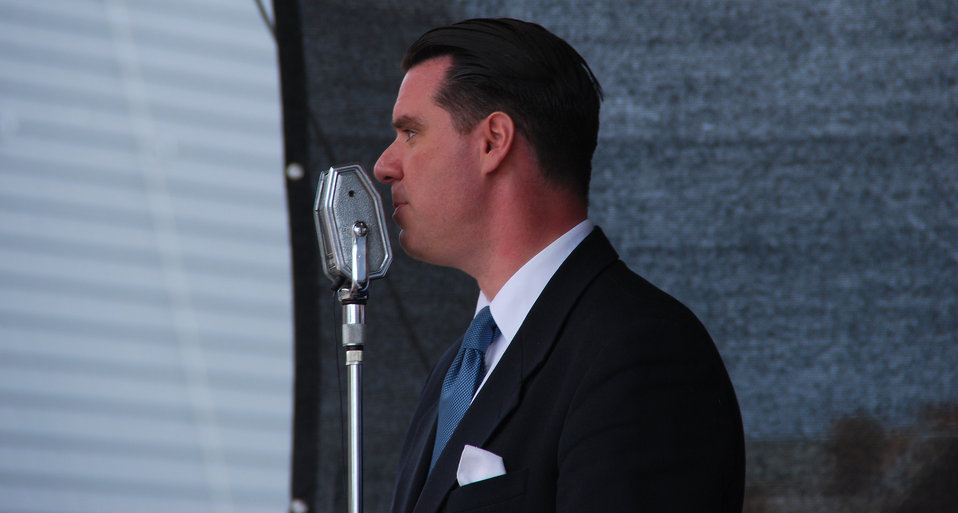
Andrej Hermlin, Deutscher Pianist und Bandleader